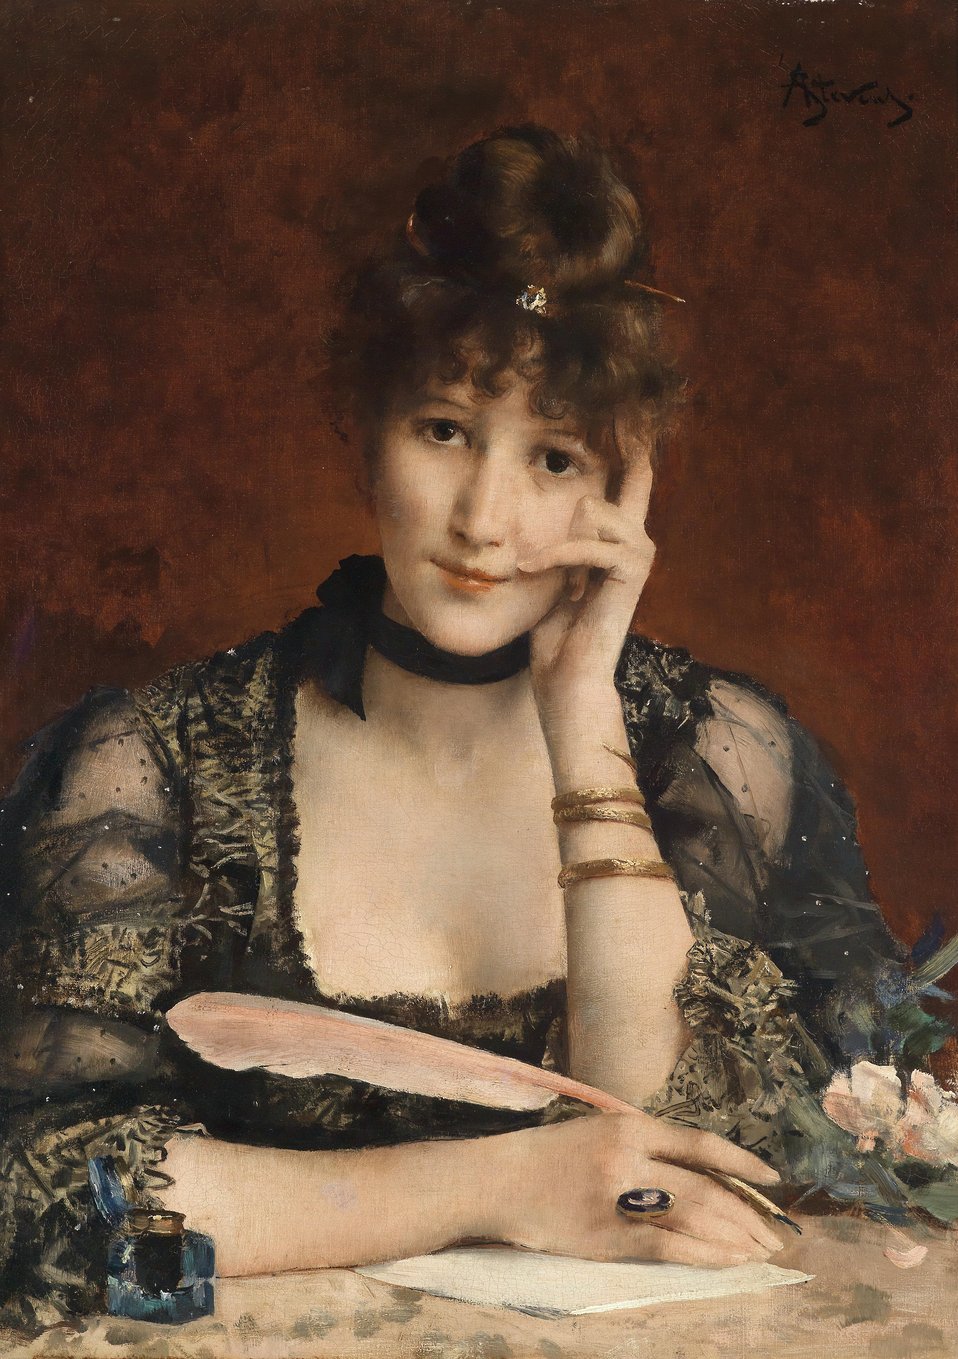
Alfred Stevens - The Letter